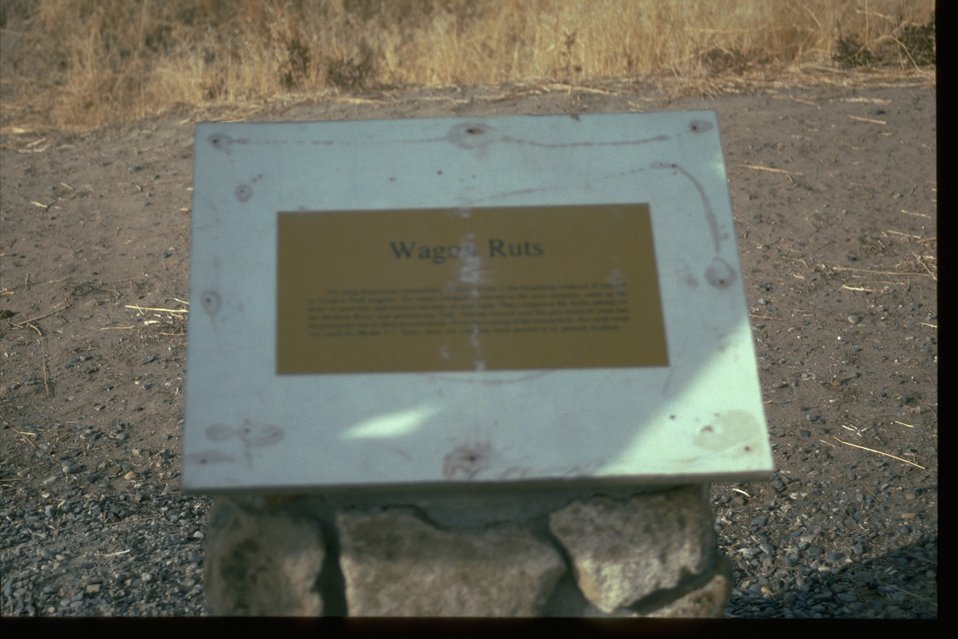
Oregon Trail interpretive panel.